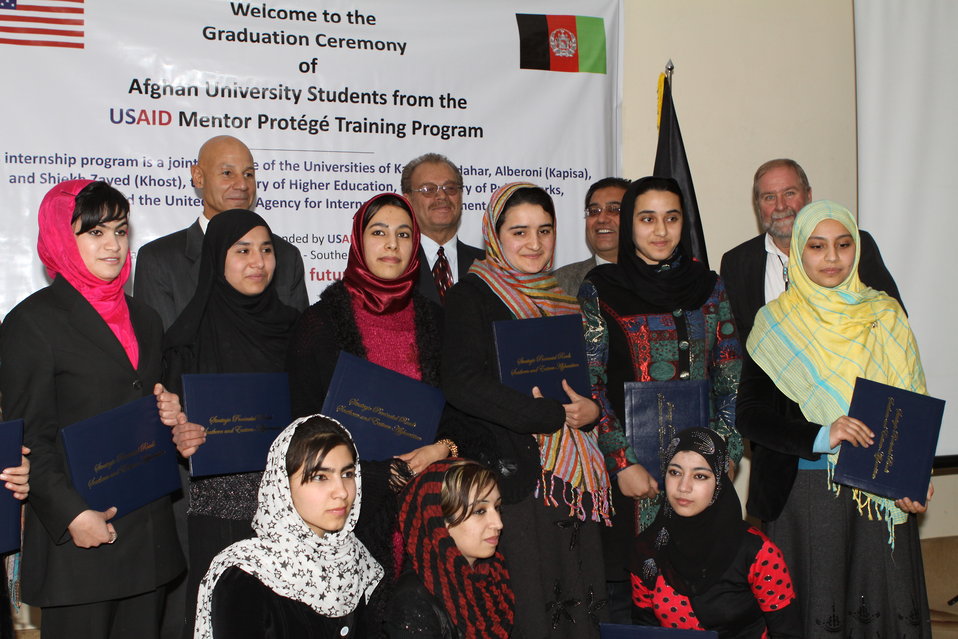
Female University Students Complete Internship

Kabul, Afghanistan | March 16, 2011 – In response to a demand for qualified Afghan engineers, Kabul University celebrated completion of an intensive five-month Mentor Protégé Training Program today by 10 female fourth year university students. The Training Program is a joint effort between the Government of the Islamic Republic of Afghanistan, the U.S. Agency for International Development (USAID), and the Universities of Kabul, Kandahar, Alberoony in Kapisa, Shiekh Zayed in Khost. The graduation ceremony highlighted collaboration with these national institutions in building the technical skills of young Afghans, made possible by USAID.

Four of the interns are engineers, while the remaining six are from the faculties of computer science, economics, and psychology.

Speaking about the event, H.E. Minister of Public Works Abdul Qudus Hamidi said, “The future of Afghanistan lies in developing the skills of our youth, and the engineering skills of these graduates today represent a small but important step forward for the country.”

Keynote speakers at the ceremony included H.E. Deputy Minister of Higher Education Abdul Rahim; USAID Senior Deputy Mission Director Robert Hellyer; and Chancellor of Kabul University Professor Hamidullah Amin. Approximately 150 people, including current and former students attended the graduation.

Launched last year, the Mentor Protégé Training Program has provided qualifying students the opportunity to intern with USAID’s Strategic Provincial Roads-South and East Afghanistan project and gain practical experience in a real work environment. The goal of the program was to offer interns the opportunity to gain hands-on experience to reinforce their formal studies. A total of 30 students from four national universities have benefitted from this program.

“The promotion of women’s rights is integrated into the overall U.S. Government development strategy and can be found in key programs, including education, healthcare, security, rule of law, political participation, agriculture, and economic development,” said Robert Hellyer. “The U.S. Government is committed to the Afghan leadership of programs that directly enhance development, particularly as it relates to women’s issues.”

This event also highlighted the learning achievements of students and emphasized the importance of hands-on internship programs. The curriculum is designed to instill students with the knowledge and confidence to qualify for engineering positions upon completion of their fourth year at their respective universities.